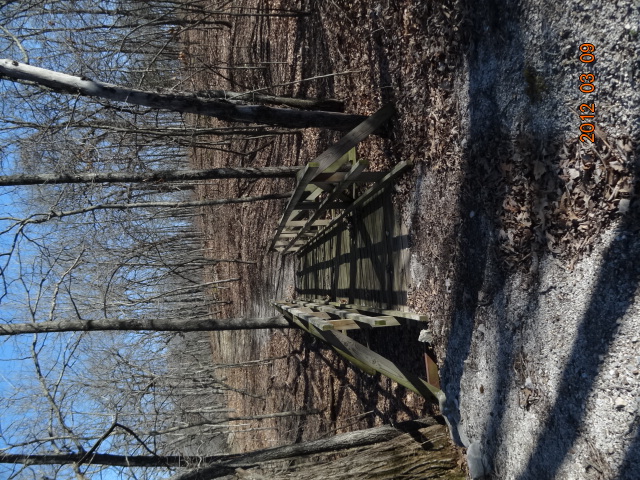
Root Cemetary Trail Bridge

YCC bridge